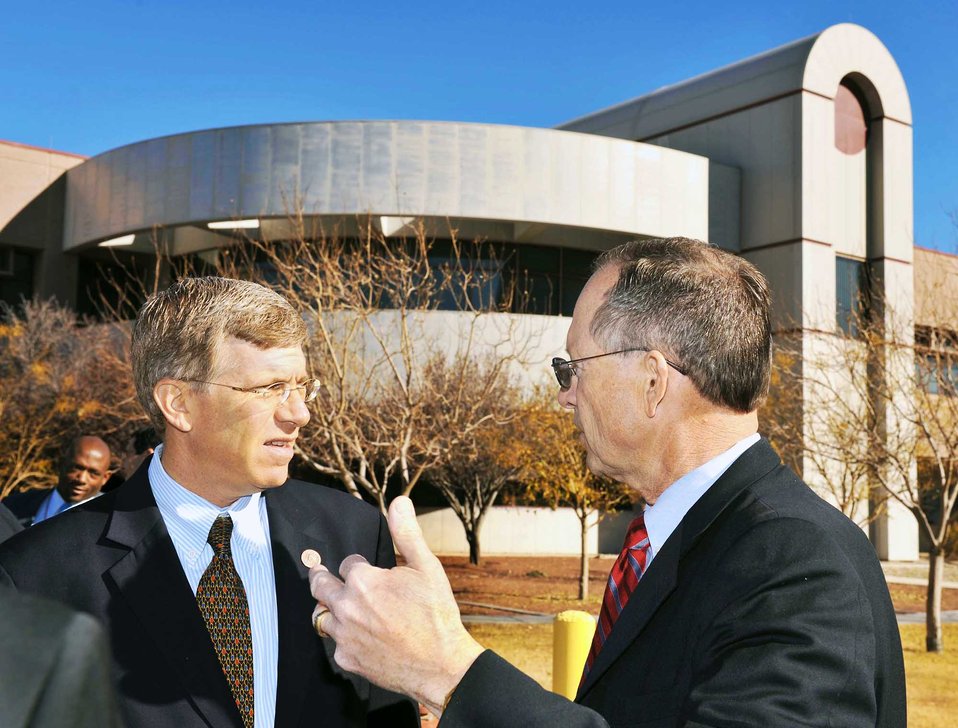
Deputy Secretary Poneman speaks with Sandia President and Laboratories Director Tom Hunter.